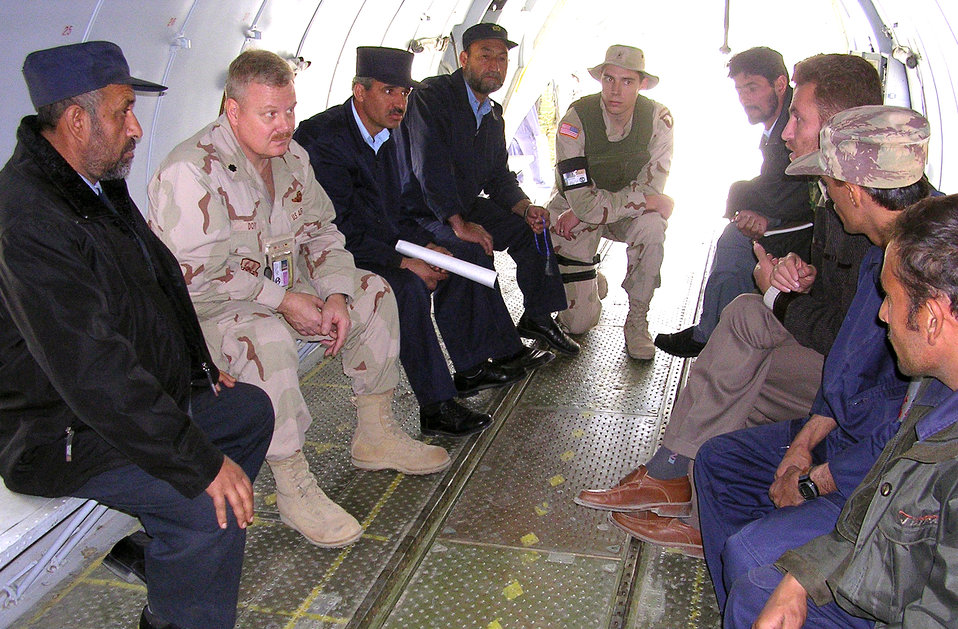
Lt. Col. serves on three AEF rotations

AFGHANISTAN -- Lt. Col. Tim Doty (second from left) discusses issues with members of the Afghan air corps aboard an AN-32 cargo aircraft.